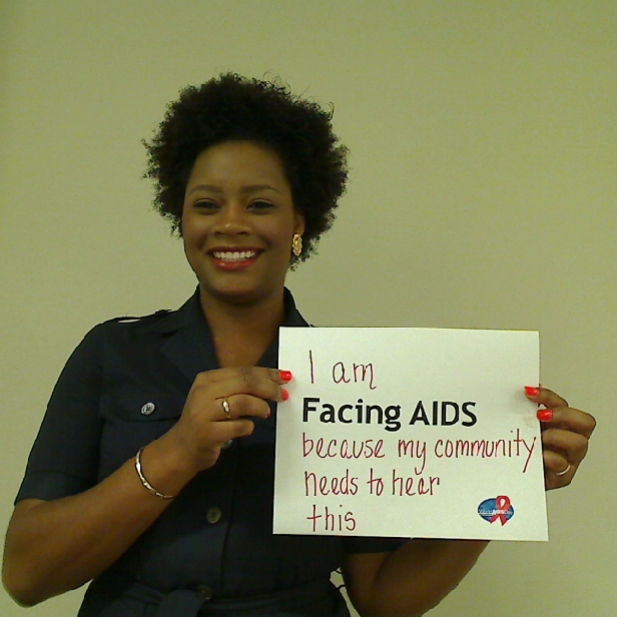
I am Facing AIDS because my community needs to hear this